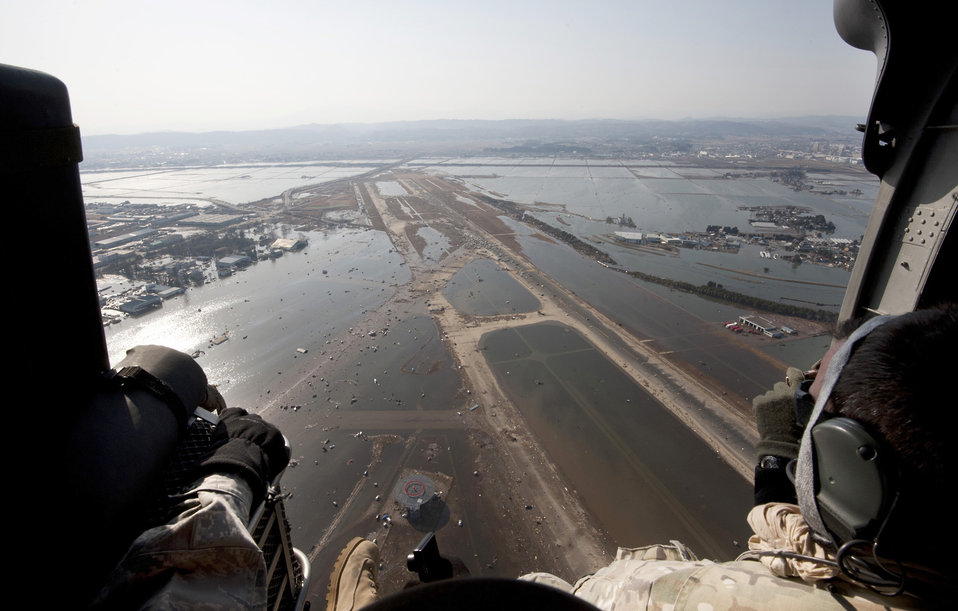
Japan's aftermath

Airmen and Marines fly over the Sendai Airport, Japan, March 13, 2011, to survey the aftermath of the 8.9-magnitude earthquake and subsequent tsunami that struck the region. The small dots covering the runway are vehicles left there after the tsunami water receded. The service members are airlift and rescue leaders assisting with Japan's earthquake and tsunami recovery effort.